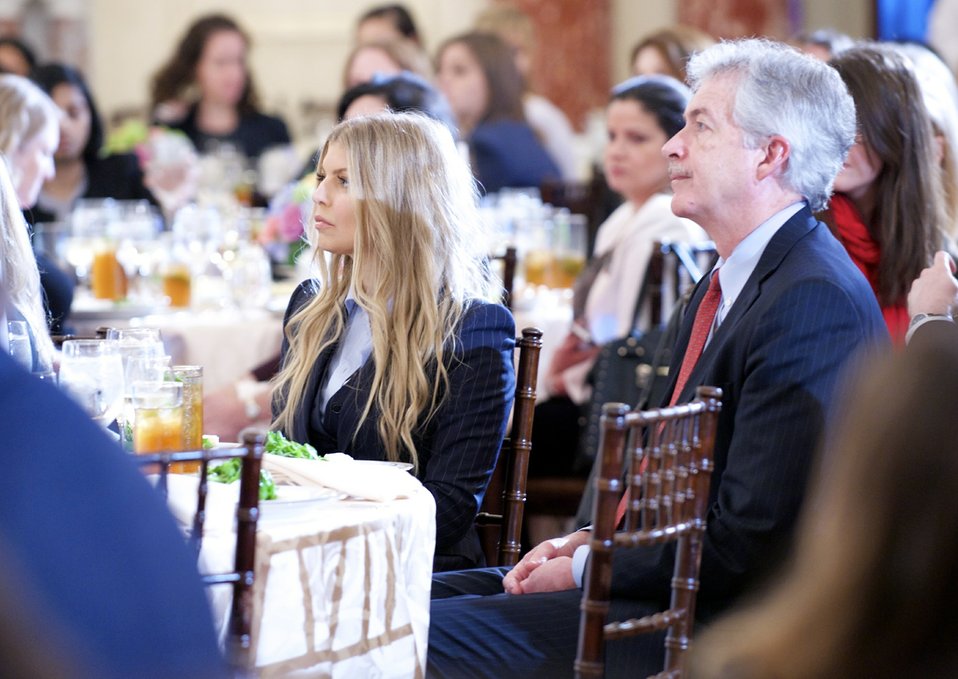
Deputy Secretary Burns and Avon Global Ambassador Fergie Participate in the Launch of the Gender-Based Violence Emergency Response and Protection Initiative

Deputy Secretary of State Bill Burns and Avon Global Ambassador Fergie participate in the launch of the Gender-Based Violence Emergency Response and Protection Initiative at the U.S. Department of State in Washington, D.C., on March 20, 2014.